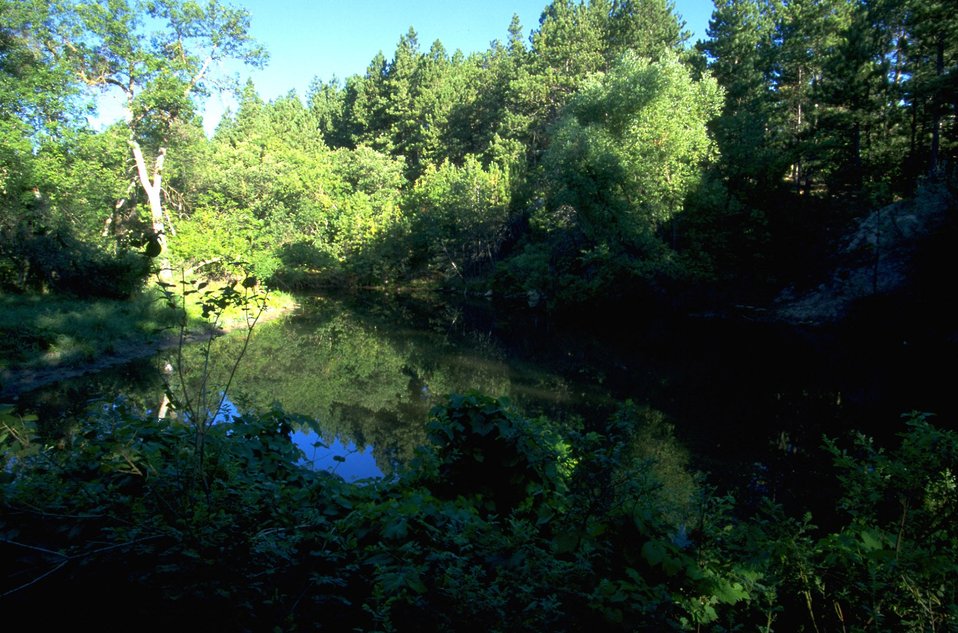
Frog Pond on Cattle Creek